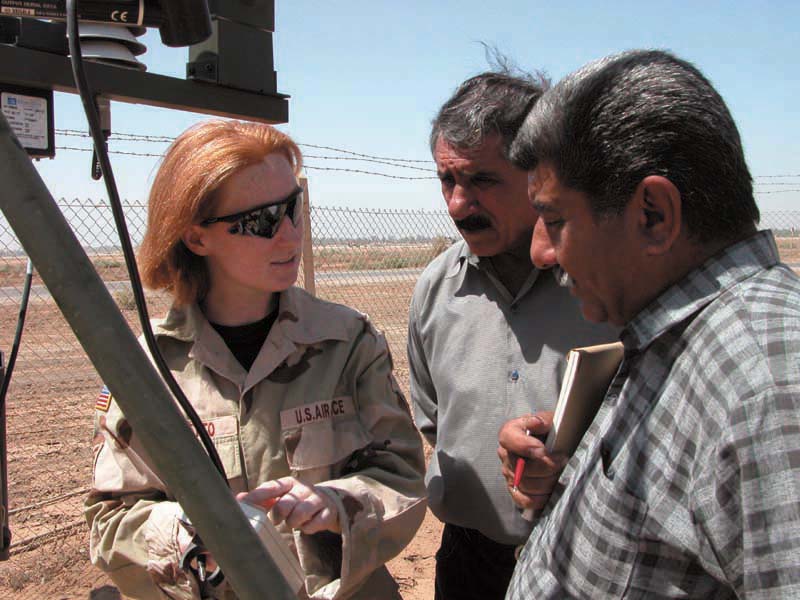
What's the weather like?

OPERATION IRAQI FREEDOM -- Staff Sgt. Julie Moretto answers questions by members of Iraq's meteorological organization. Moretto is a 447th Air Expeditionary Group airman deployed to Baghdad from the 15th Air Support Operations Squadron at Hunter Army Air Field, Ga.